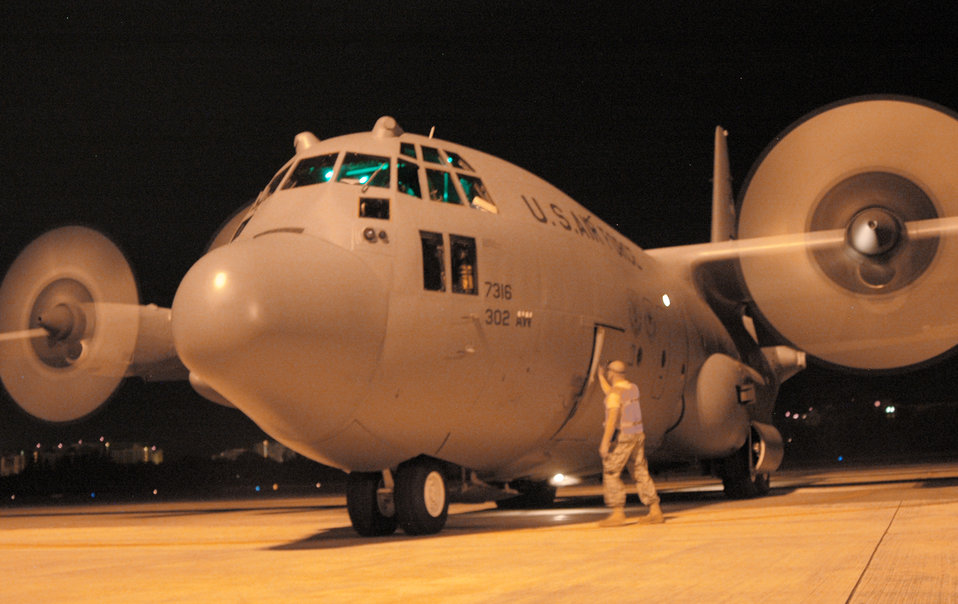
Airmen deployed to Puerto Rico fly Haiti relief missions

Tech. Sgt. Brad Dahl closes the hatch on a C-130 Hercules Jan. 25, 2010 at Muniz Air Base, Puerto Rico. Sergeant Dahl is a C-130 crew chief.